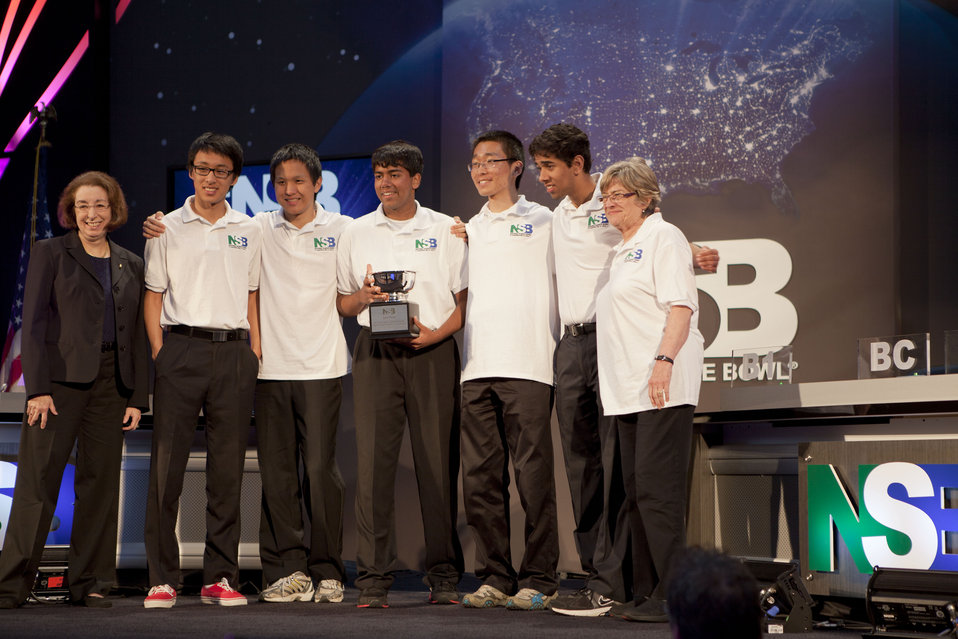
National Science Bowl 2013

Teammates Yu Wang, Calvin Deng, Tejas Sudaresan, Sammy Luo and Ashwin Monian stand with coach Leslie Brinson after accepting their trophy of second place at the 2013 National Science Bowl.